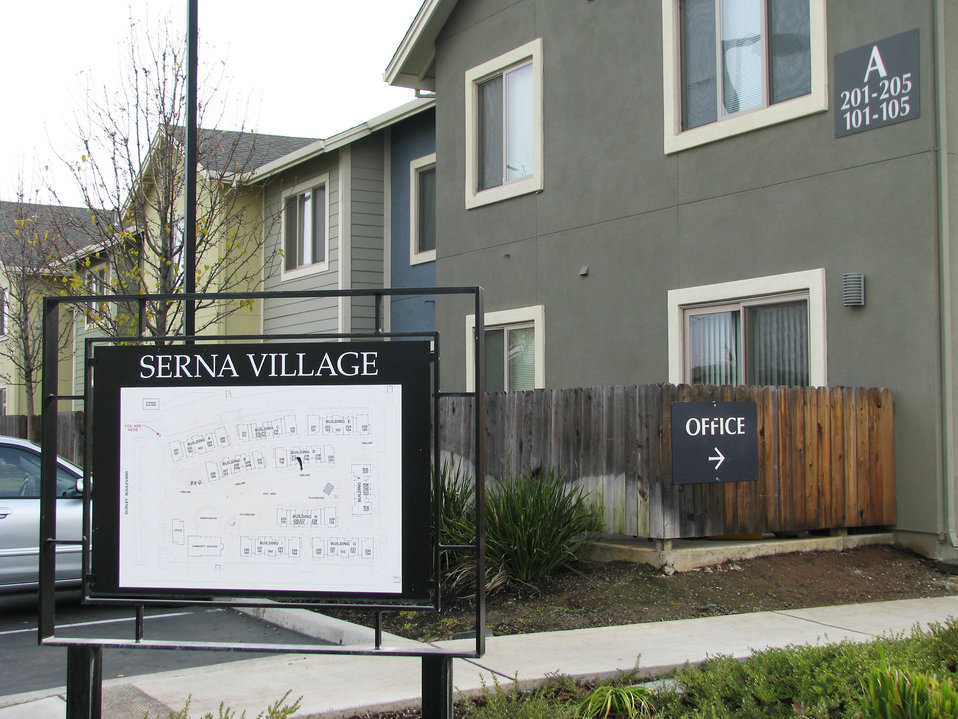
Former McClellan Air Force Base now model community for helping the homeless

In what used to be a vacant lot across from the “base gym” on the former McClellan Air Force Base, Calif., is now a model community for helping the homeless. This village of 83 newly-built apartments is a safe haven for 100 recently homeless parents and more than 200 of their children.